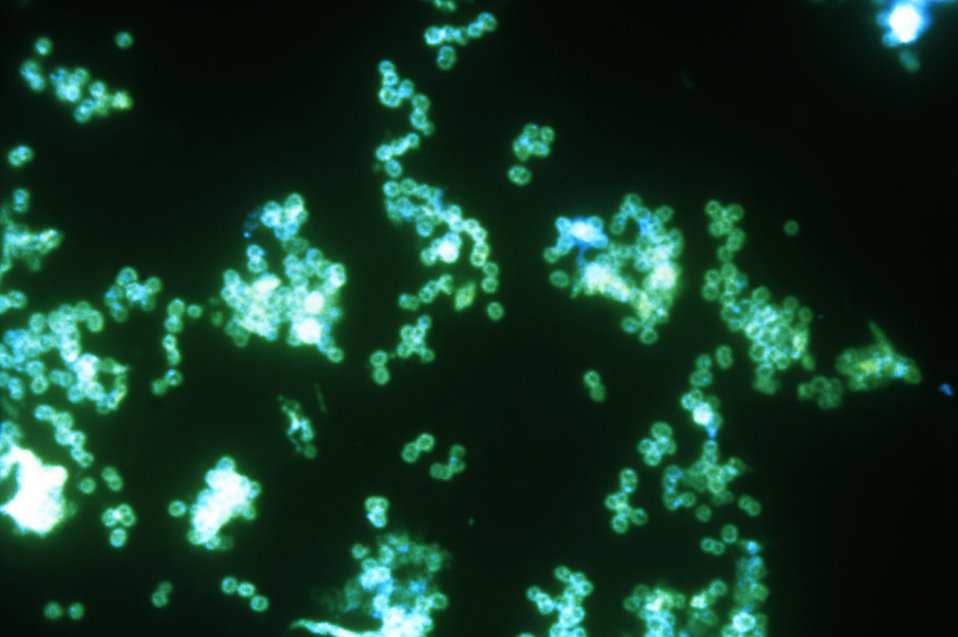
This image shows a positive fluorescent antibody tests for the Gram-negative bacterium Neisseria Gonorrhoeae.